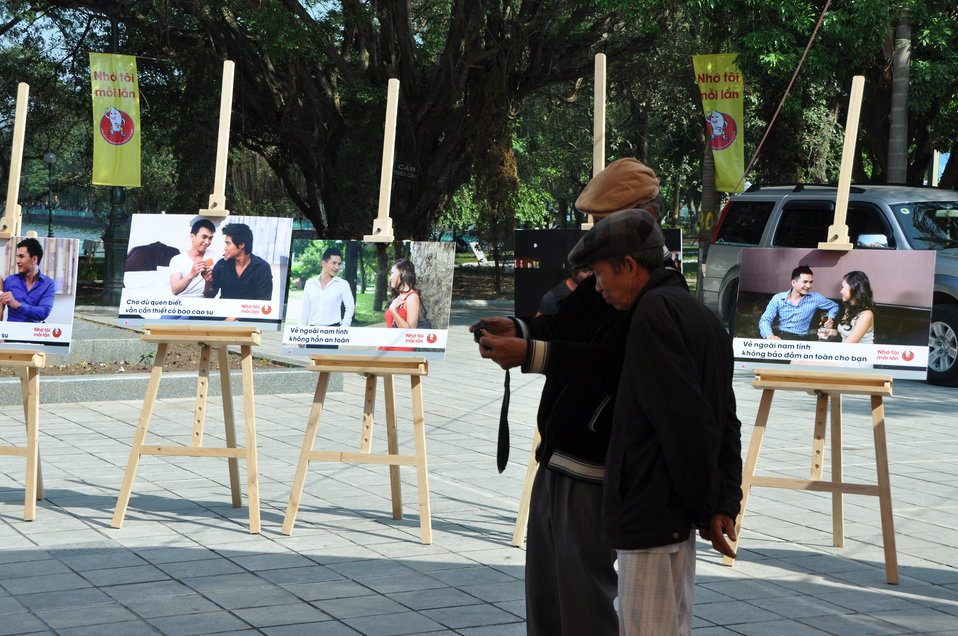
100% Condom Use Campaign Launch, Dec. 2, 2011